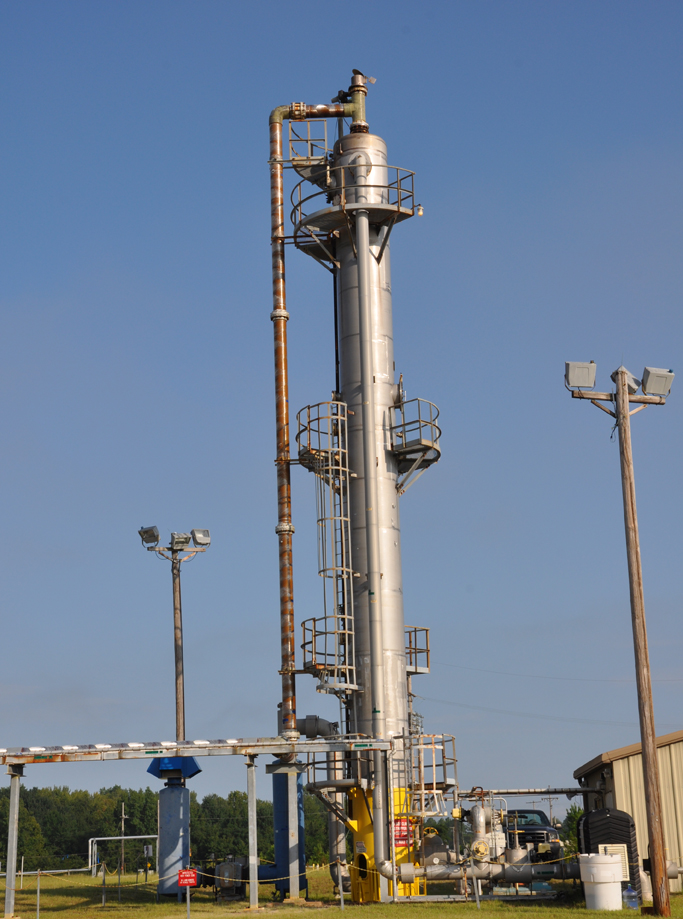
Five Billion Gallons M-1 Air Stripper

Pictured here is the M-1 Air Stripper, an environmental remediation technology that has extracted and remediated more than five billion gallons of groundwater from the Savannah River Site’s A and M Areas.